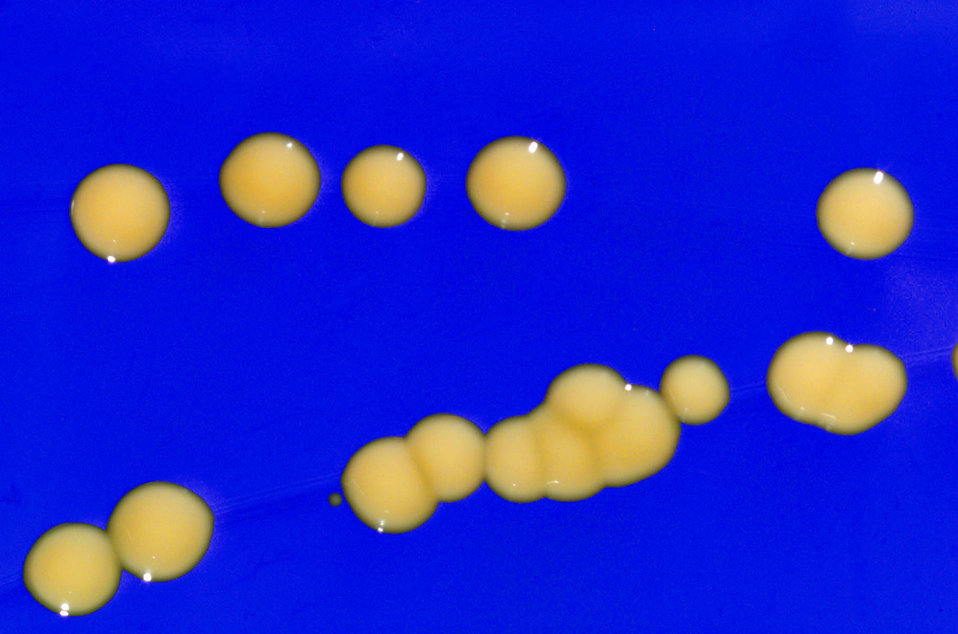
This image, which was photographed in 2005 using a blue filter, depicted a close-up perspective of Mycobacterium cosmeticum bacterial colonies of strain LTA-388T, growing on Middlebrook 7H10 agar, which is used primarily in the isolation of mycobacteria, as well as for the antimicrobial susceptibility testing of these organisms.What's in a Name?